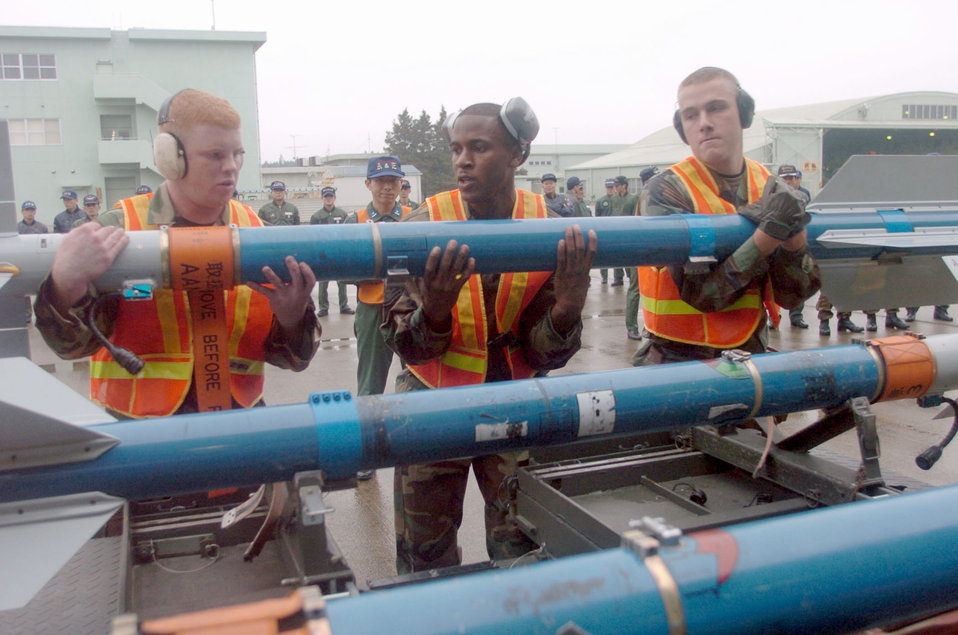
U.S., Japanese forces conduct weapons familiarization training

HYAKURI AIR BASE, Japan -- (From left) Senior Airman Charles Lester, Staff Sgt. Paul Riley and Airman 1st Class Brian Gates load an AIM-7 Sparrow on a Japanese F-15 aircraft during turn-around familiarization training. The training is part of Keen Sword 2005, a defensive readiness exercise involving U.S. and Japanese forces. All three U.S. Airmen are aircraft armament systems specialists from the 18th Maintenance Group at Kadena Air Base, Japan.